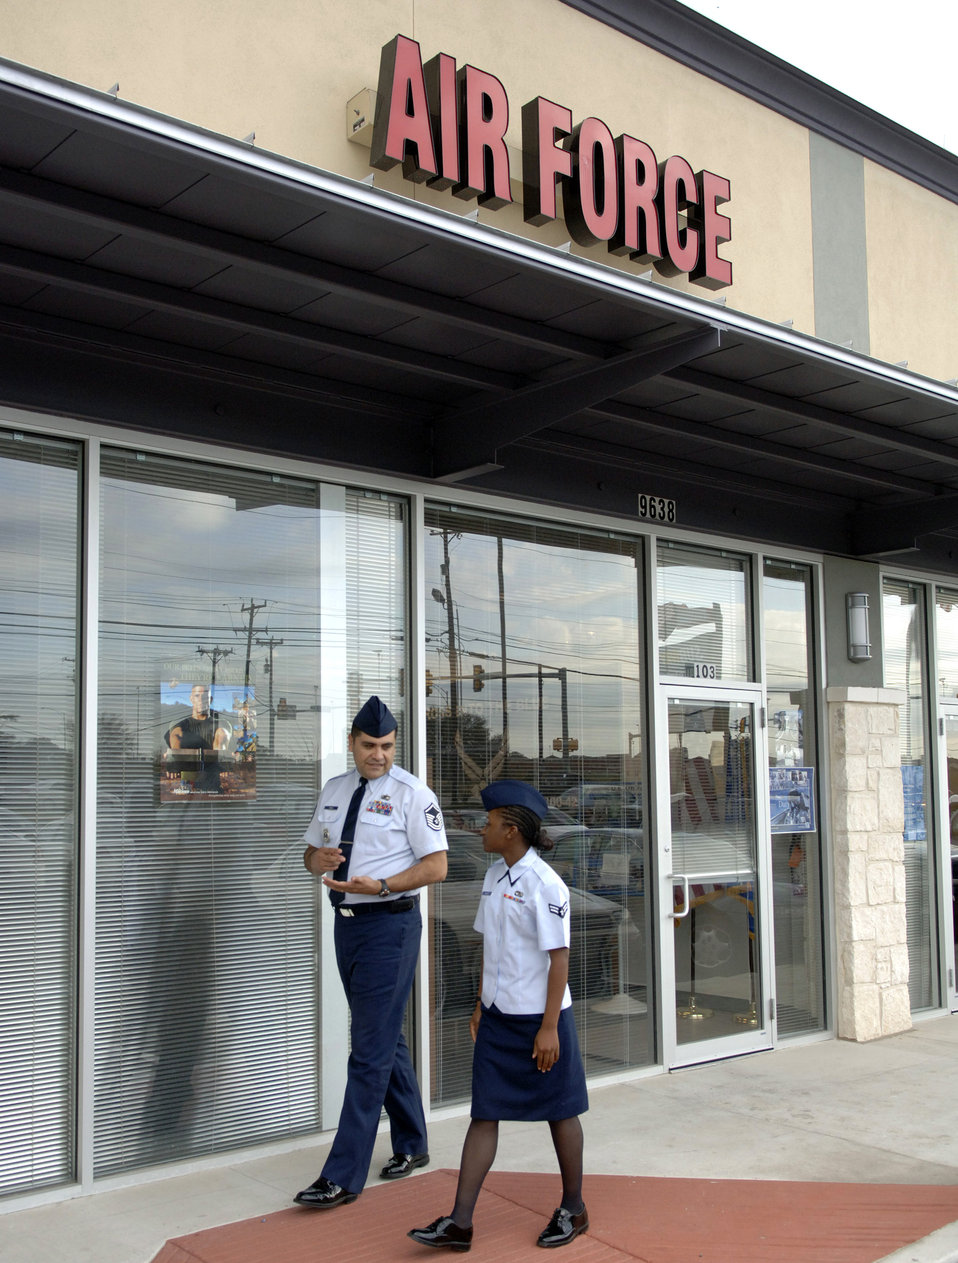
Once an Airman, always an Airman

Air Force recruiters like San Antonio recruiter Master Sgt. Ruben Perez, shown here talking to Airman 1st Class Stephanie Miller, sometimes find themselves going above and beyond because they work in the local community. Two recruiters in Boise, Idaho, recently had the opportunity to provide some comfort to a distraught visitor who happened to wander into their office.